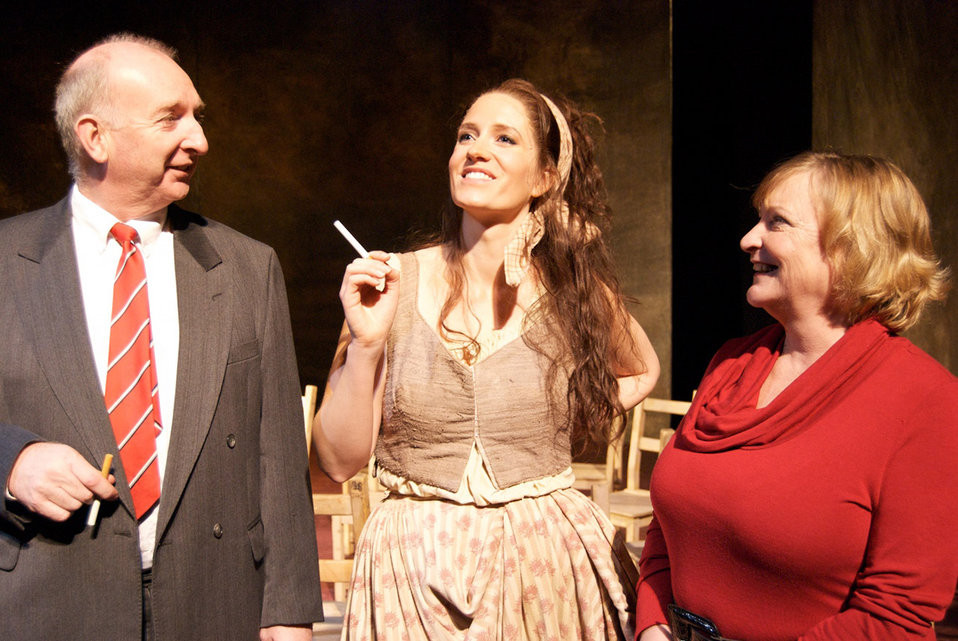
Vaping on stage

On the stage of carmen with the welsh national opera..